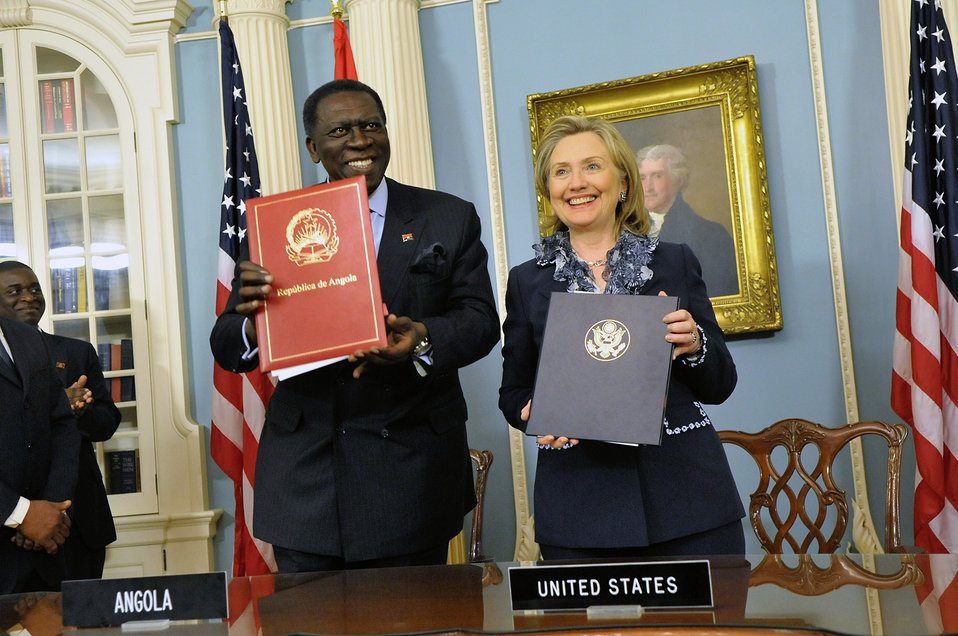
Secretary Clinton and Angolan Foreign Minister Asuncao Afonso dos Anjos Sign a Memorandum of Understanding

U.S. Secretary of State Hillary Rodham Clinton and Angolan Foreign Minister Asuncao Afonso dos Anjos hold a signing ceremony for a memorandum of understanding establishing the U.S.-Angola Strategic Partnership Dialogue at the U.S. Department of State in Washington, D.C., on July 8, 2010.